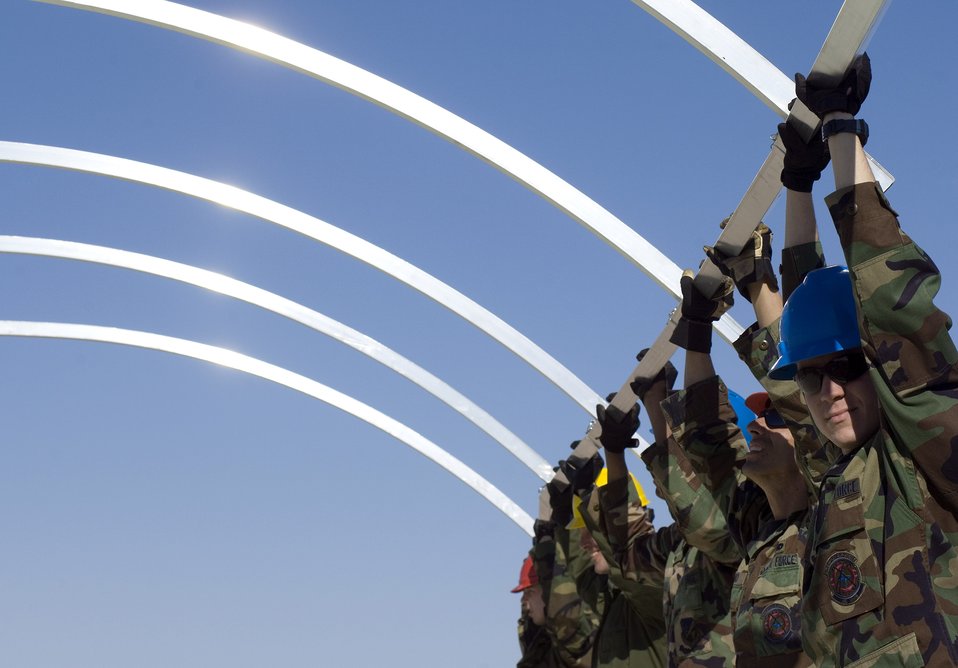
Providing shelter is a BEAR

Airmen from the 49th Material Maintenance Group work to build a small shelter system during a Jan. 16 exercise at Holloman Air Force Base, N.M. Members of the 49th MMG can build a Basic Expeditionary Airfield Resource, or BEAR, in austere conditions anywhere in the world. Airmen of the 49th MMG maintain a constant state of readiness and can be tasked to support any Department of Defense or Federal Emergency Management Agency humanitarian operations along with primary duties of supporting combat operations.